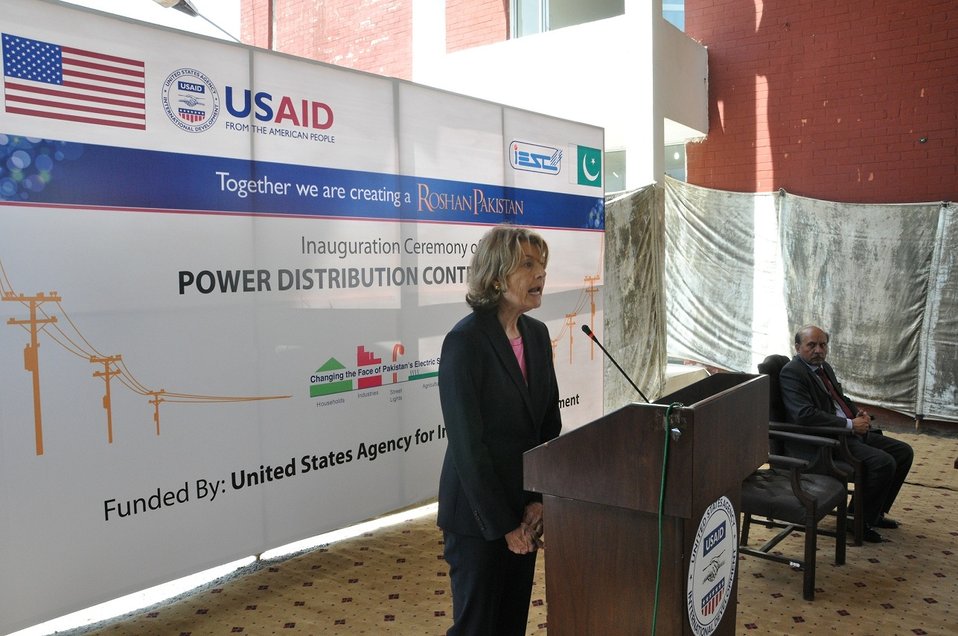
U.S. Improves IESCO’s ability to Reduce Unscheduled Load Shedding

Nancy Estes, Acting Mission Director, United States Agency for International Development (USAID), addressing the audience.